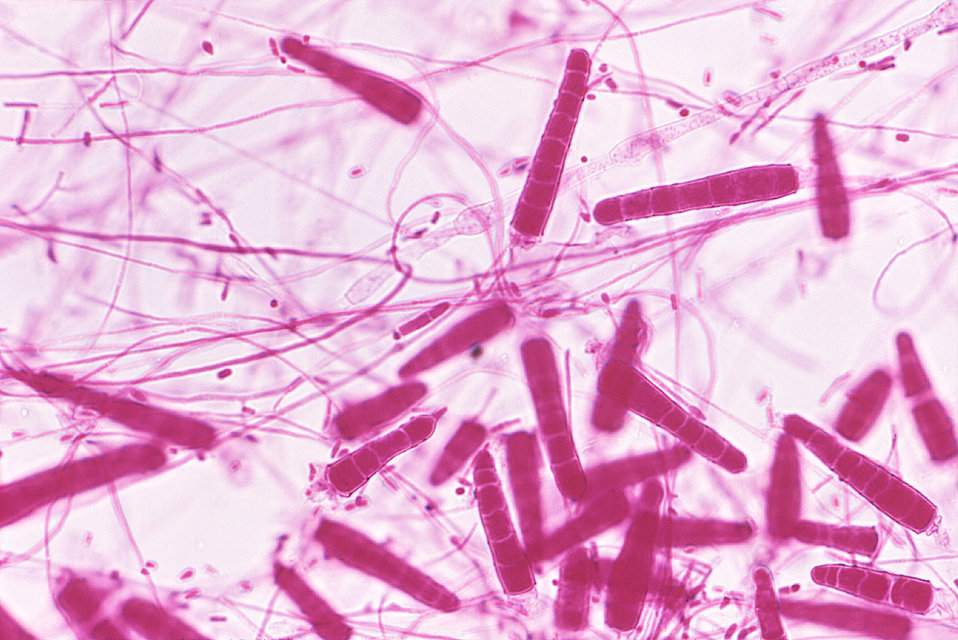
This photomicrograph depicts the microconidia of the fungus Trichophyton mariatii.